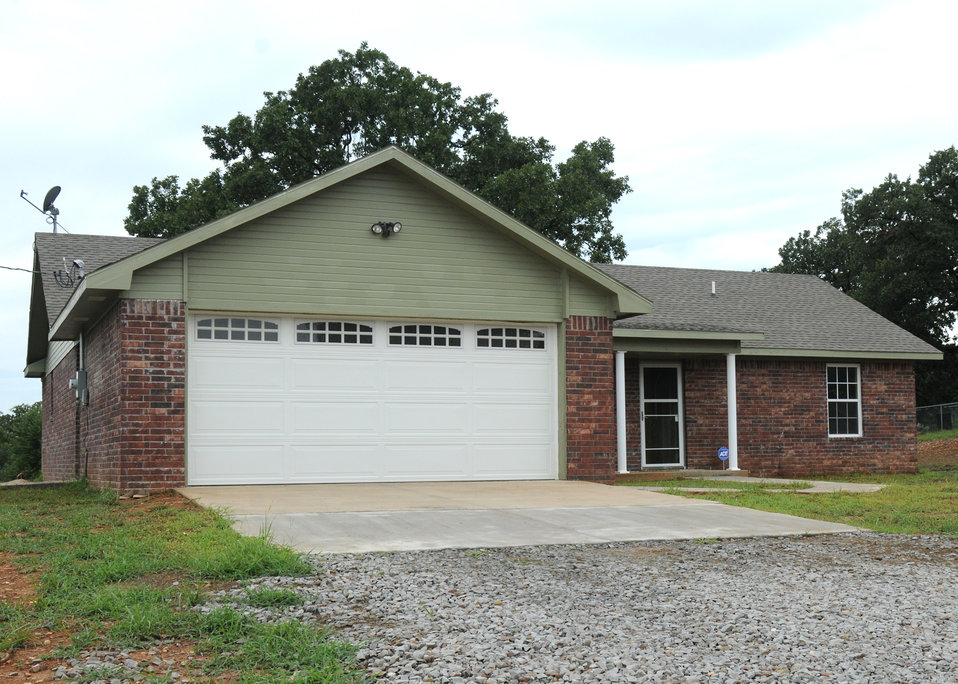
Bertha Anne Davis's new home in Fort Coffee, Oklahoma. Mrs. Davis is a single mother raising her son and her 2 nephews and a niece. She received a home loan from the U.S. Department of Agriculture Rural Development (RD) agency using funding from the American Recovery and Reinvestment Act (AARA) for a home loan of $98 thousand. She was living in a 2-bedroom ranch and now has a new 4-bedroom home in Fort Coffee, Oklahoma. She works for the Fort Coffee, OK school system and is attending night school to get her teaching degree.